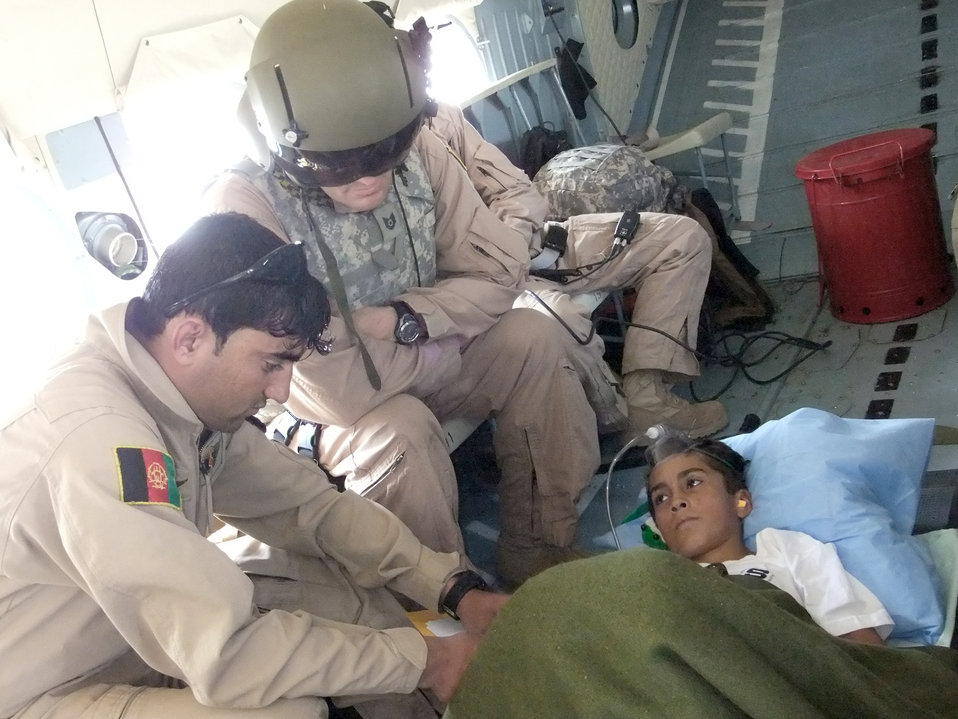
Flying the wounded home

Afghan Airmen and NATO Air Training Command-Afghanistan advisers work as one to transfer a patient from Bagram Airfield, Afghanistan, during a reverse aeromedical evacuation mission Sept. 27, 2010, to Forward Operating Base Bostic in Konar Province.